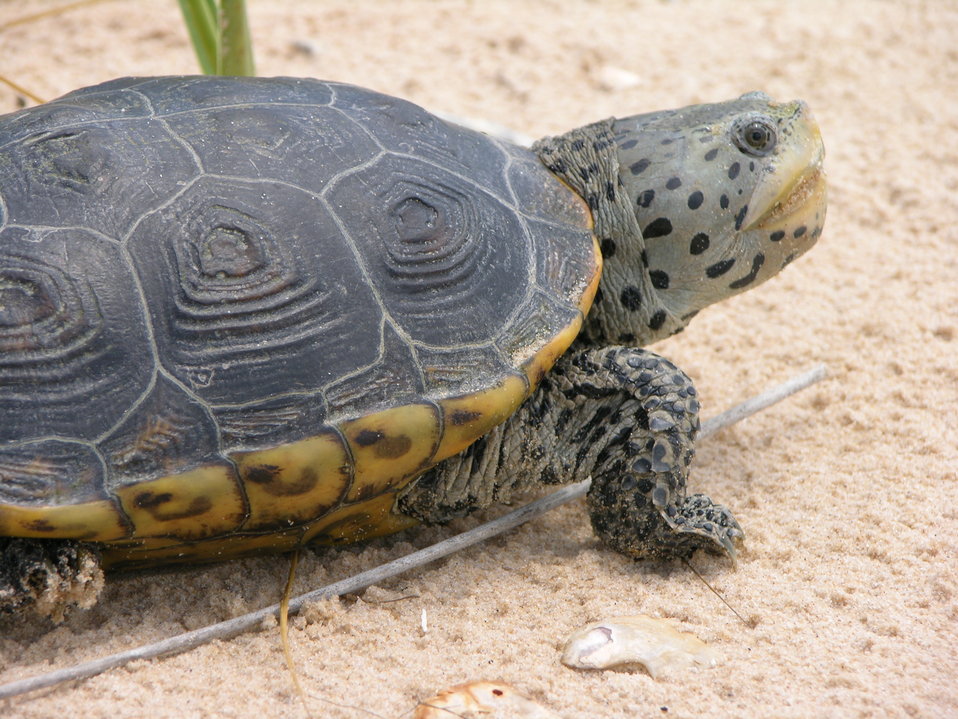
Diamondback in profile

The Grand Bay National Estuarine Research Reserve is researching the diamondback terrapin turtle, whose habitat is likely to be inundated as the sea rises.